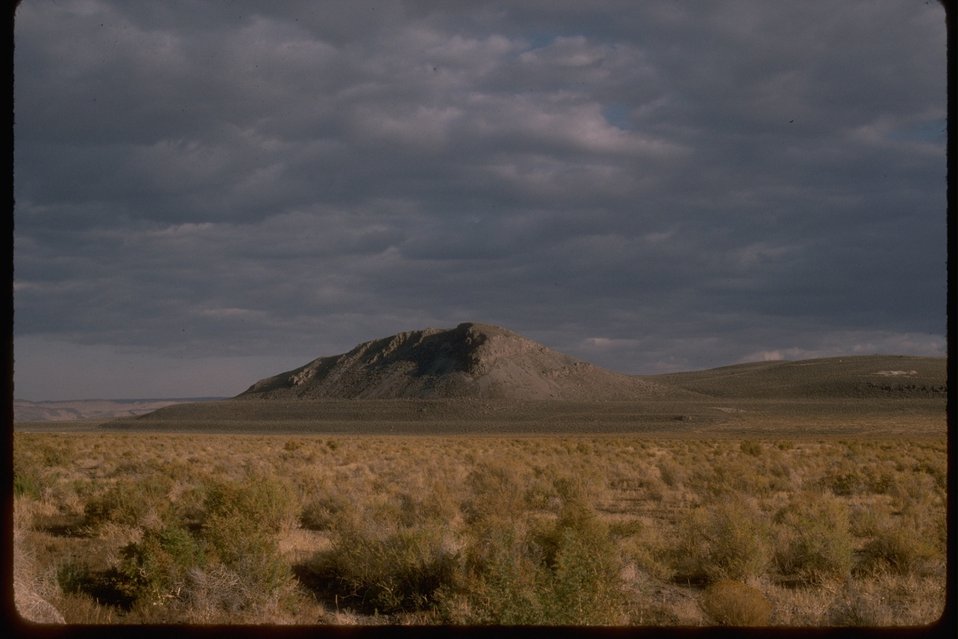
Aztec Monument near Summer Lake, Oregon.